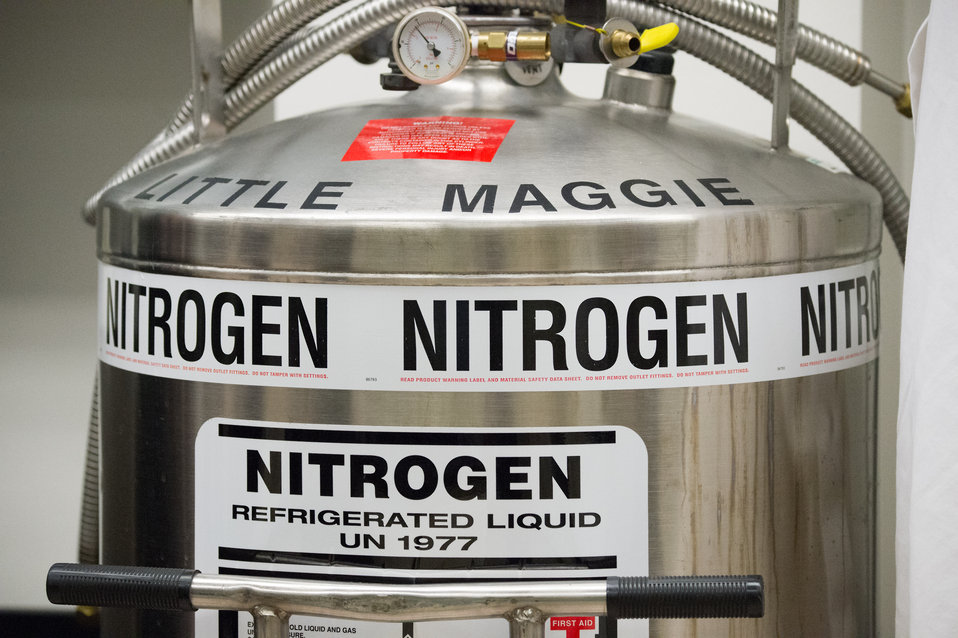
Portable double walled vacuum insulated tanks such as 'Little Maggie' are used in the laboratory for holding liquid nitrogen for the essential, safe cryogenic freezing process of samples that will be stored at -196 °C (-321 °F) in liquid storage and -193 C. (-315 °F) in vapor storage, at the U.S. Department of Agriculture (USDA), Agriculture Research Service (ARS), National Center for Genetic Resources Preservation (NCGRP), in Ft. Collins, CO, on Wednesday, Nov. 6, 2013.